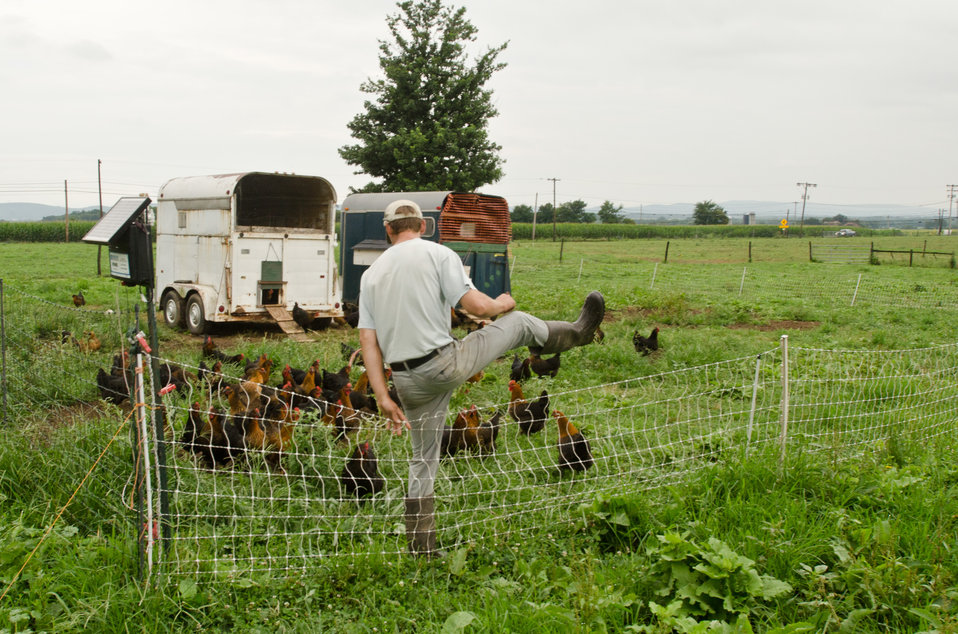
Farm assistant George Kloph turned the power off of the protective fence to check on the health and safety of laying hens at Nick’s Organic Farm, in Adamstown, MD, on Friday, July 12, 2013. The fence helps keep predators away from the chickens. Discarded horse trailers have been repurposed as coops with nests on the side that allow for easy egg harvesting. The farm, owned by Nick Maravell, produces Black Angus beef, chicken, turkey, eggs, hay, soybeans, corn, alfalfa, orchard grass, rye; and other crops. The cattle are100% grass-fed receiving certified organic pasture, certified organic hay (in winter), water and mineral salts mixed with sea kelp. The cattle are not fed hormones, antibiotics or animal products. Poultry feed from grain is ground from organic grain. The poultry also graze on organic pastures. The farm has conducted on-farm research with federal, state and non-profit agencies to refine organic practices. An organization such as the U.S. Department of Agriculture (USDA) Agricultural Research Service (ARS) center in Beltsville has been able to conduct research to improve organic crops and to breed and manage the cattle so that they have.